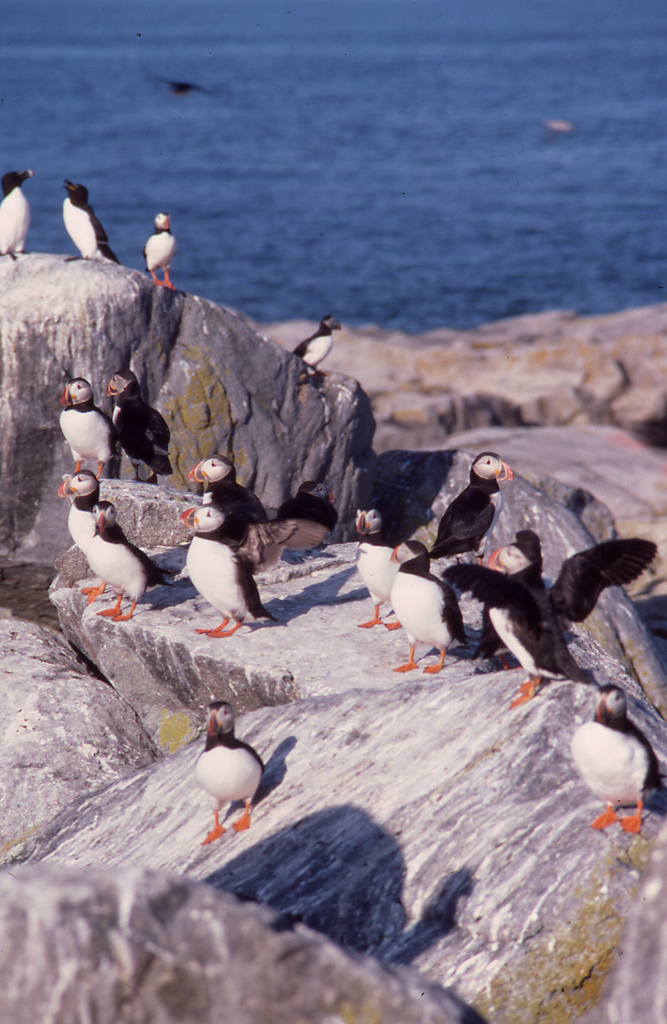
bird colony at maine coastal islands, fws